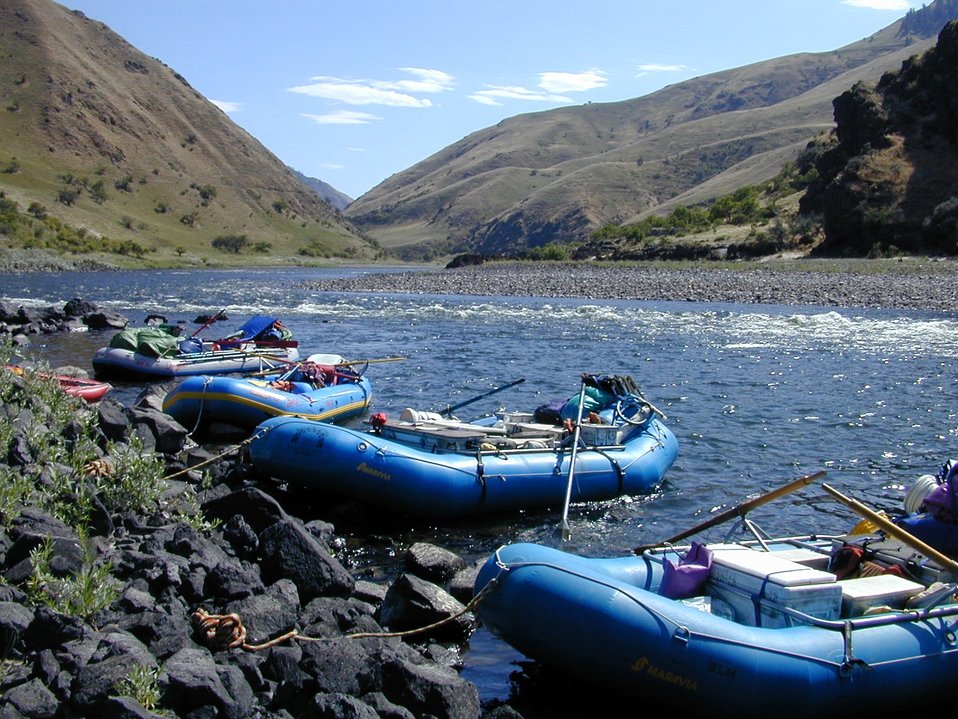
Recreation Rafting on Lower Salmon River Cottonwood Field Office UCSC Upper Columbia Salmon Clearwater District